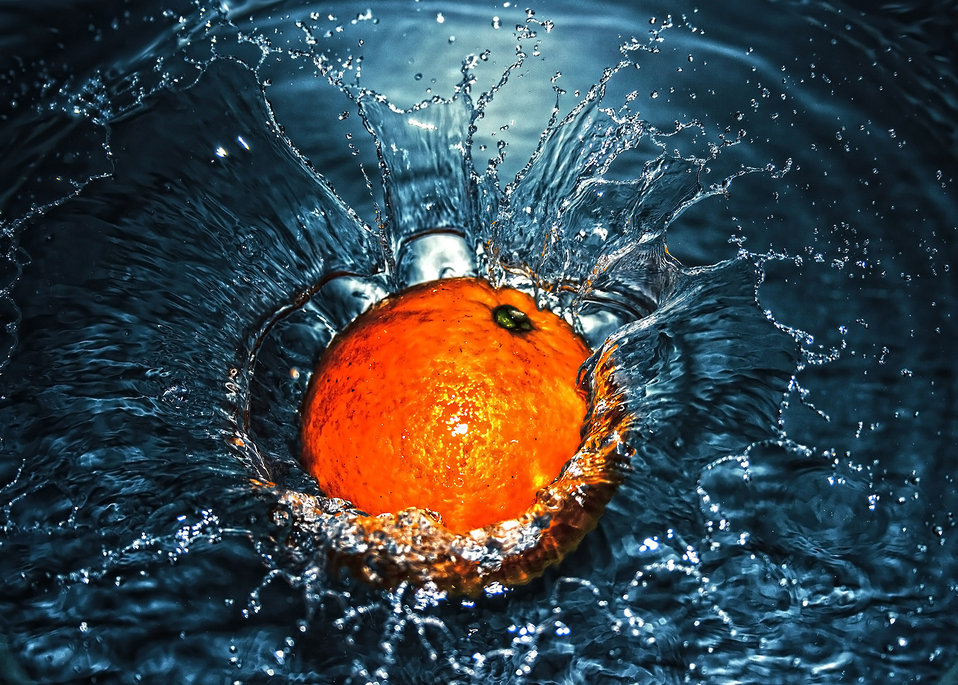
Splash #4

Orange falling into water bowl.